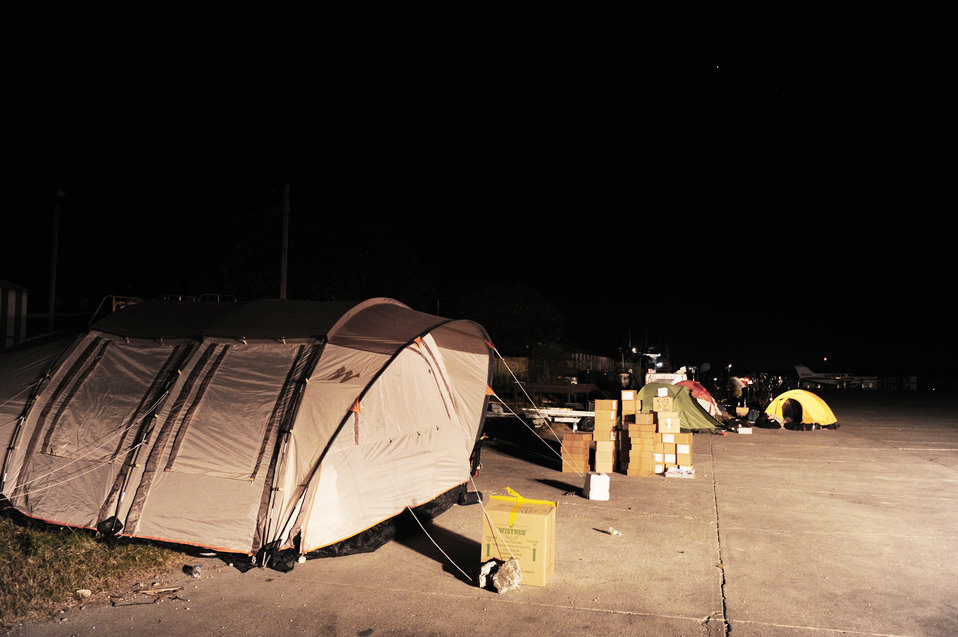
Haiti Relief Operations

Tents on the edge of the Toussaint L'Ouverture International Airport runway in Port-au-Prince, Haiti, provide shelter to U.S. military personnel Jan. 15, 2010, who are participating in the relief effort in Haiti after the devastating earthquake Jan. 12.